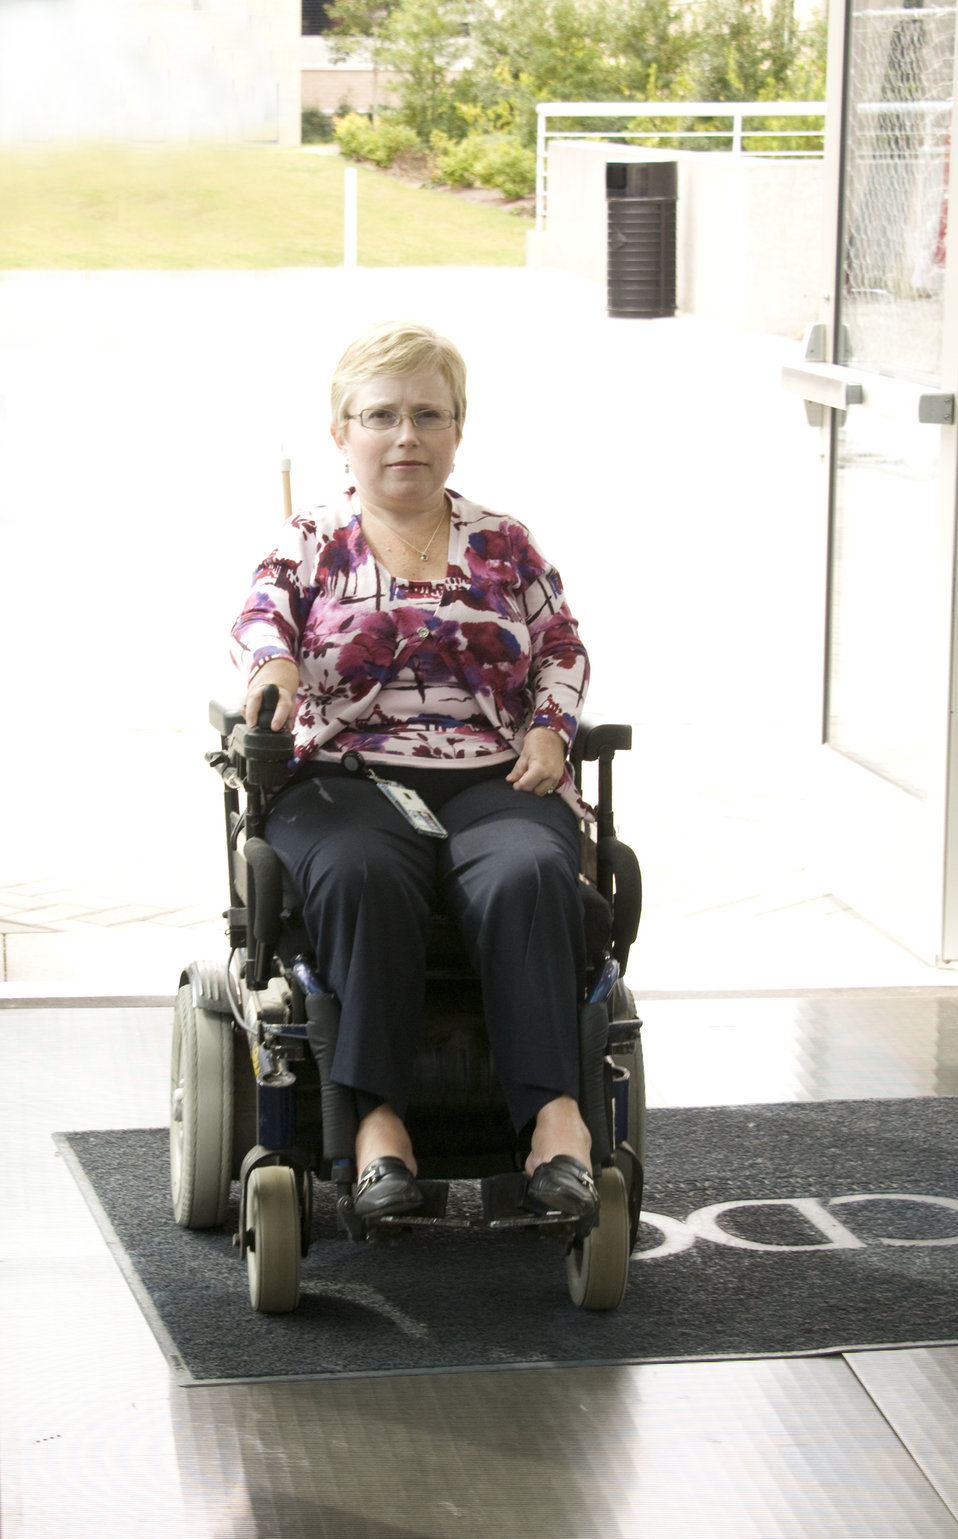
Seated in her wheelchair, the woman pictured here had arrived at one of the Centers for Disease Control's (CDC) campuses in Atlanta, Georgia, and was in the process of entering a highly-accessible building, passing unhindered through the facility's mechanized doorway.